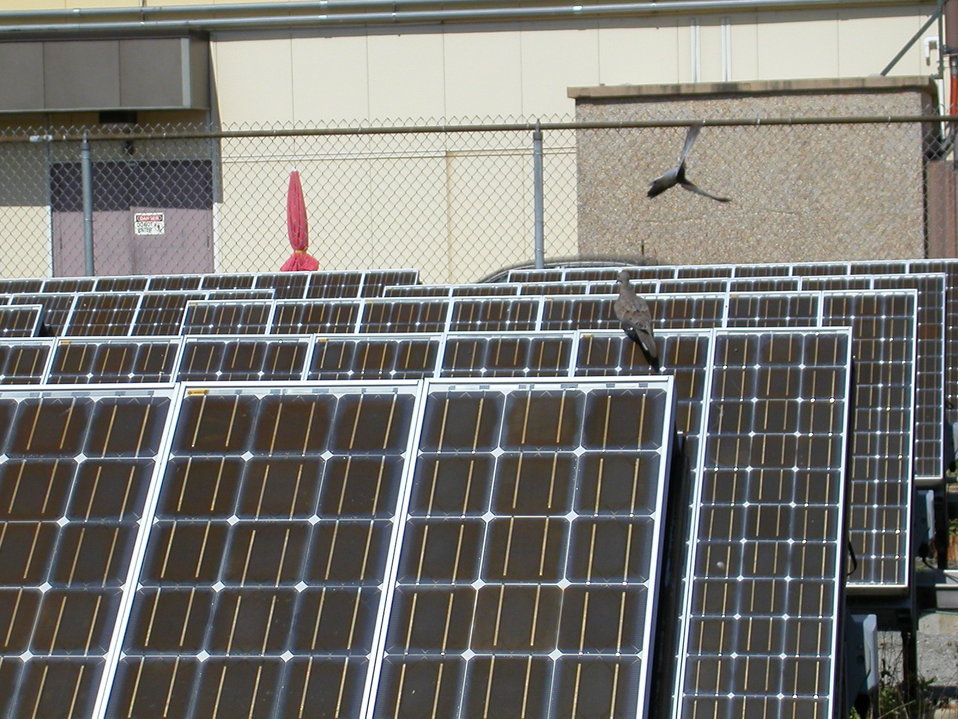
A mourning dove perches on a solar panel. U. S. Department of Agriculture researchers and Mississippi State University collaborators are investigating whether solar and biofuel production on and near airports might be a safe and feasible way to encourage renewable energy sources. The goal is to identify sources that limit use by wildlife hazardous to aircraft and are compatible with safe airport operations.